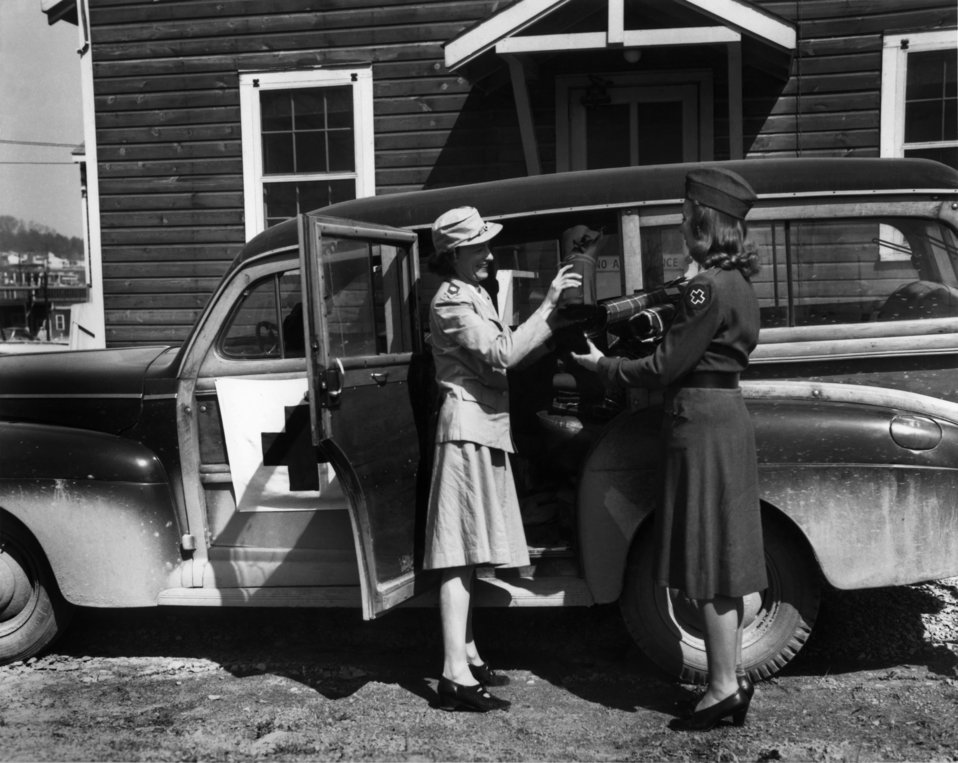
Red Cross Matar Corps. Oak Ridge

pro 344-4 DOE photo Ed Westcott 3/7/45 Oak Ridge Tennessee